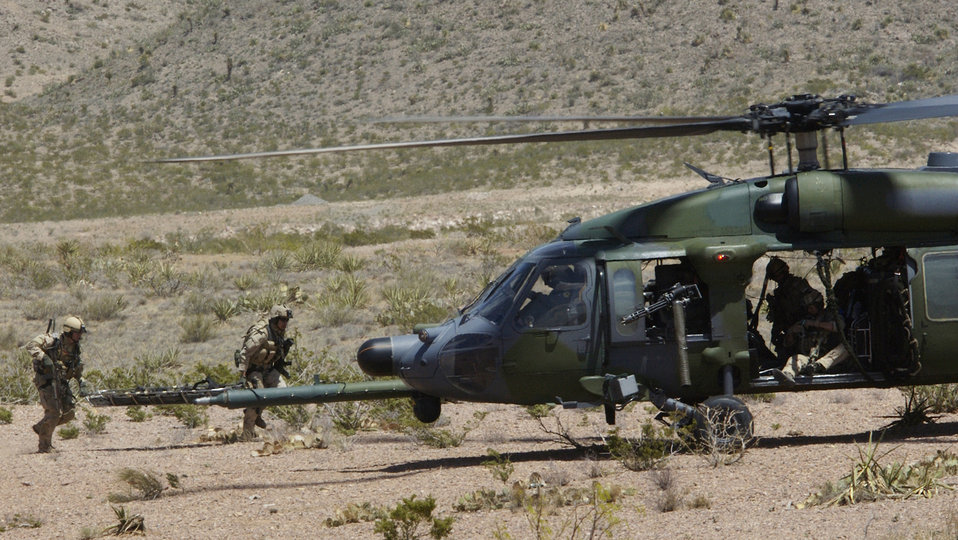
Search and rescue

FORT BLISS, Texas -- Pararescuemen rescue a downed pilot by taking him to a waiting HH-60G Pave Hawk for extraction here April 9. The rescue extraction was a simulated downed pilot scenario during a weapons school training course here. The pararescuemen and the HH-60G are assigned to the 66th Rescue Squadron at Nellis Air Force Base, Nev.